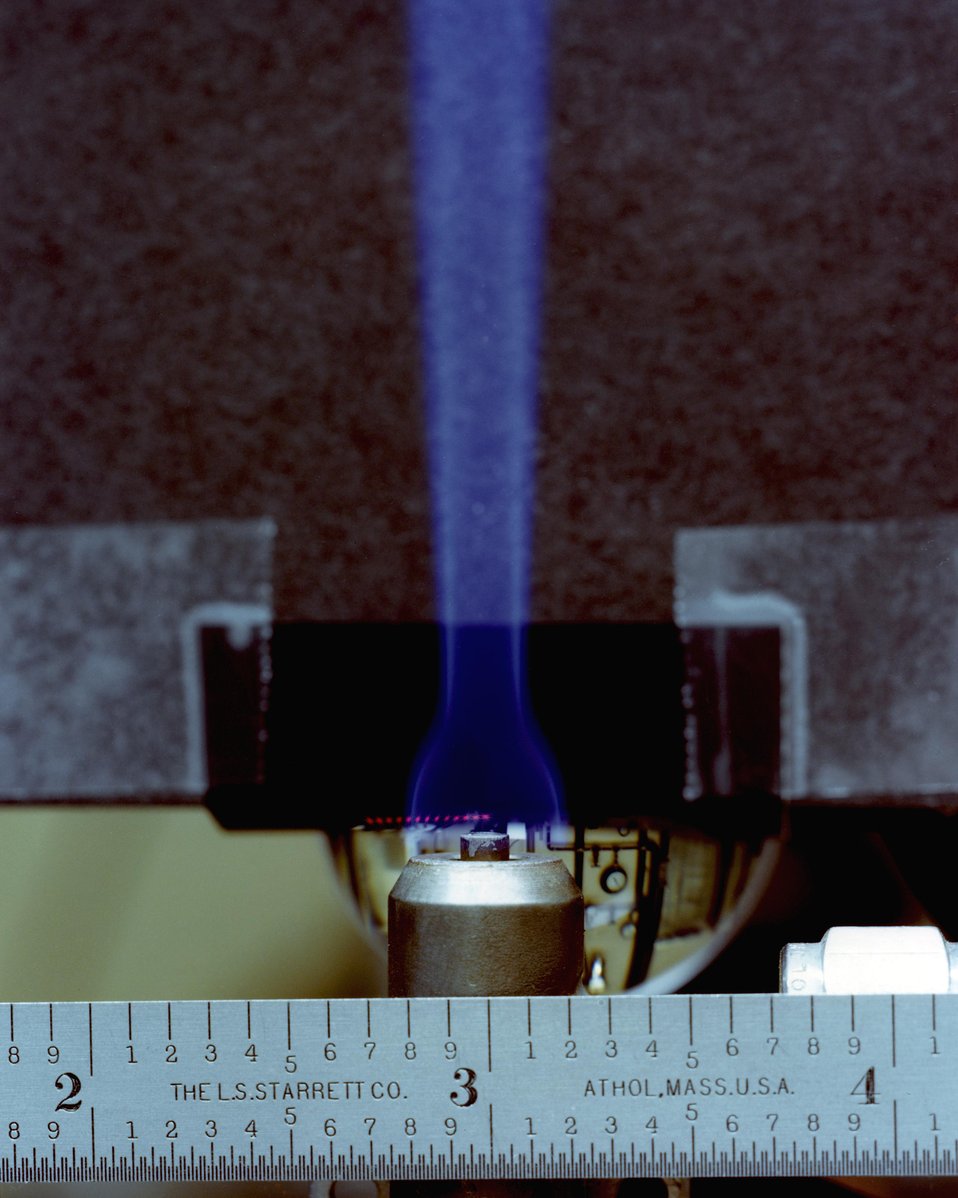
LASER SPARK SPECTROSCOPY USED TO MEASURE GAS SPECIES CONCENTRATIONS IN A FLAME.

SCIENTISTS USE ADVANCED LASERS AND COMPUTERS AT THE 50,000 SQUARE FOOT, FOUR-BUILDING COMBUSTION RESEARCH FACILITY TO STUDY EXACTLY HOW AND WHY FUELS BURN. IN THE LABORATORY BUILDING, SPECIAL LASER SYSTEMS WITH BEAMS ARE DISTRIBUTED TO 14 INDIVIDUAL LABORATORIES. EACH LABORATORY IS SERVED BY A MINICOMPUTER WHICH IS CONNECTED TO A CENTRAL DATA SYSTEM. IN ADDITION TO BENCH-TOP FLAME STUDIES, THE FACILITY HOUSES SEVERAL MAJOR COMBUSTION EXPERIMENT LABS, INCLUDING FIVE OPTICALLY PORTED RESEARCH ENGINES, A COMPUTER-CONTROLLED COMBUSTION BOMB, AND LOW-PRESSURE FLAME, COAL FLAME, AND TURBULENT FLAME LABORATORIES. THESE STUDIES COULD LEAD TO THE DESIGN OF HEAT ENGINES AND ENERGY SYSTEMS THAT BURN FUEL MORE EFFICIENTLY WHILE CREATING LESS POLLUTION.